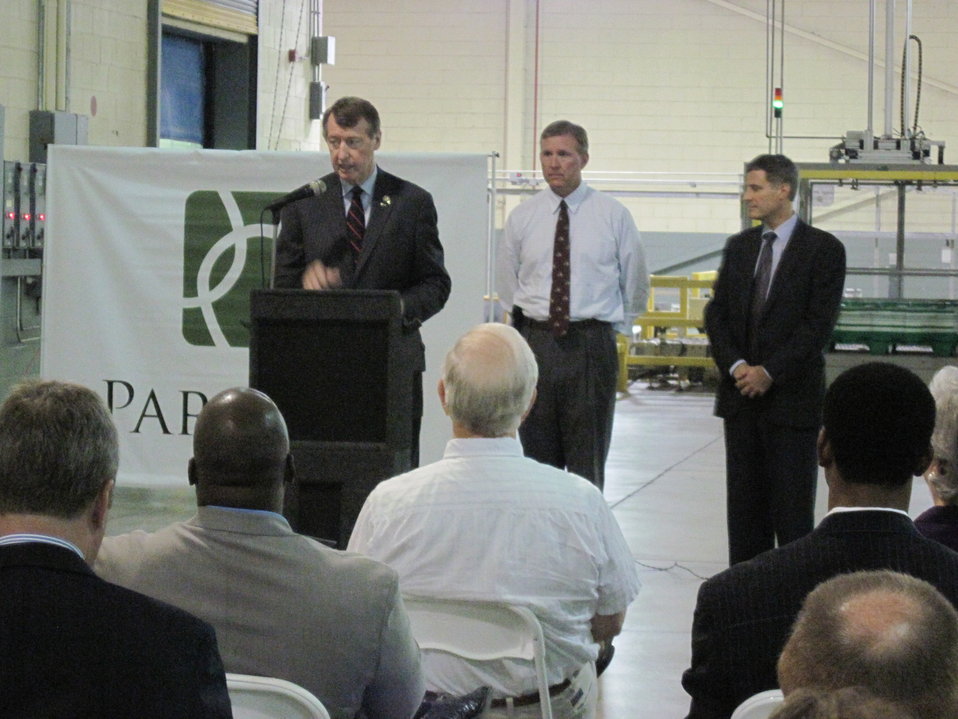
Krueger in NC, 7/12/10

Congressman Bob Etheridge speaking at Parkdale Mills plant in Sanford, NC.